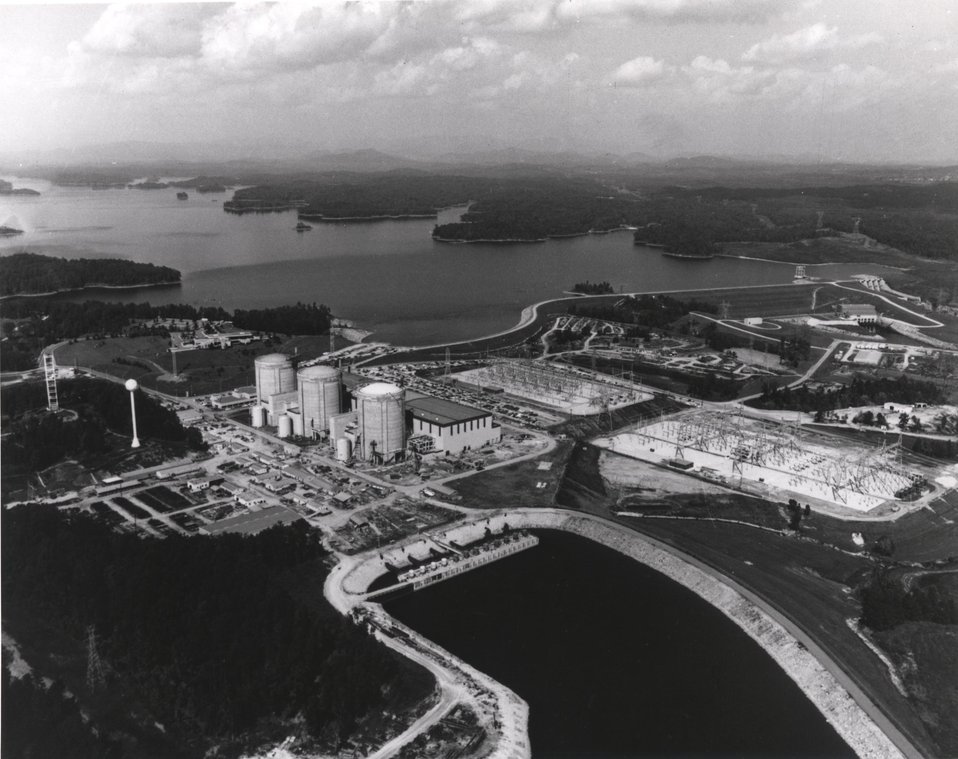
Aerial view of the Duke Power Company's Oconee Nuclear Station at Seneca, South Carolina. Circa 1974.